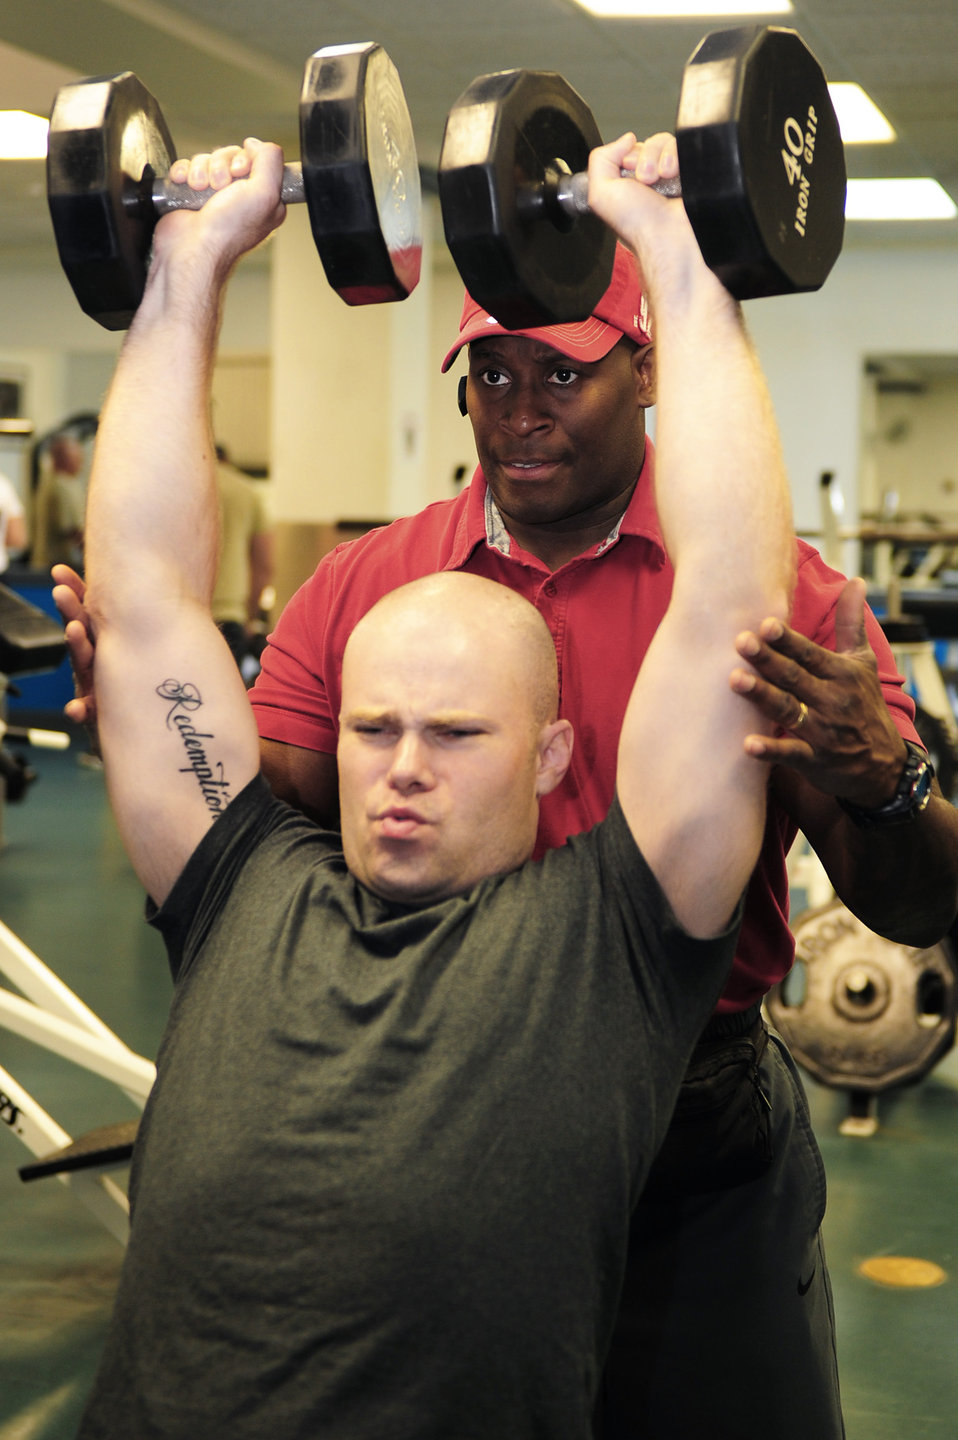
Personal trainer helps service members

Staff Sgt. David Johnson finishes a lifting set while Omar Acosta spots him. Johnson is a gym operations manager assigned to the 375th Force Support Squadron at Scott Air Force Base, Ill. Acosta is a personal trainer at the Scott AFB gym.